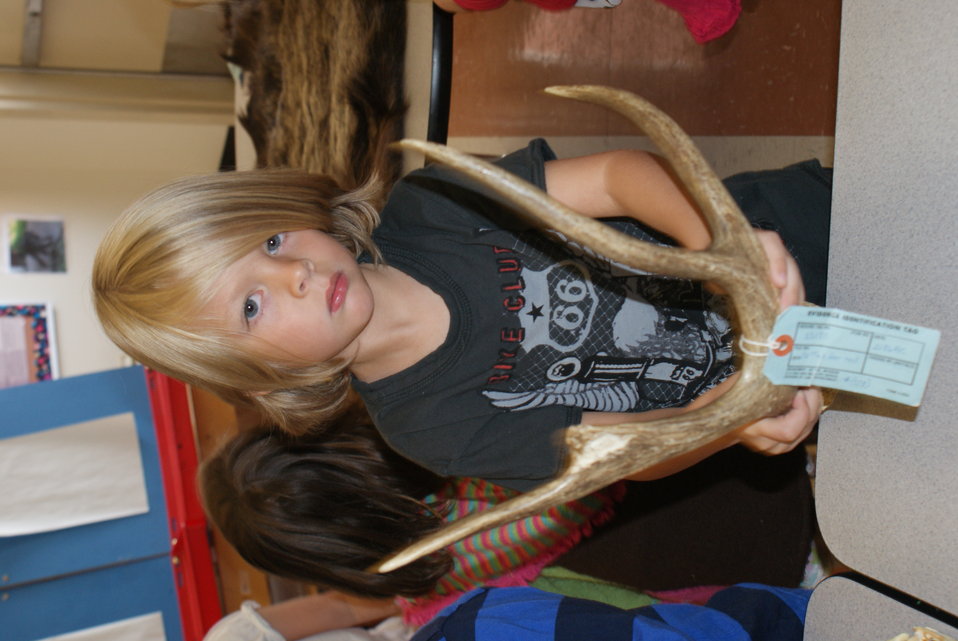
Scientists in the Community Program

U.S. Fish and Wildlife Service Mountain-Prairie Region Deputy ARD for External Affairs, Matt Kales, introduces early childhood education students at William Roberts Elementary School in Denver to some of Colorado's native and historic wildlife species.